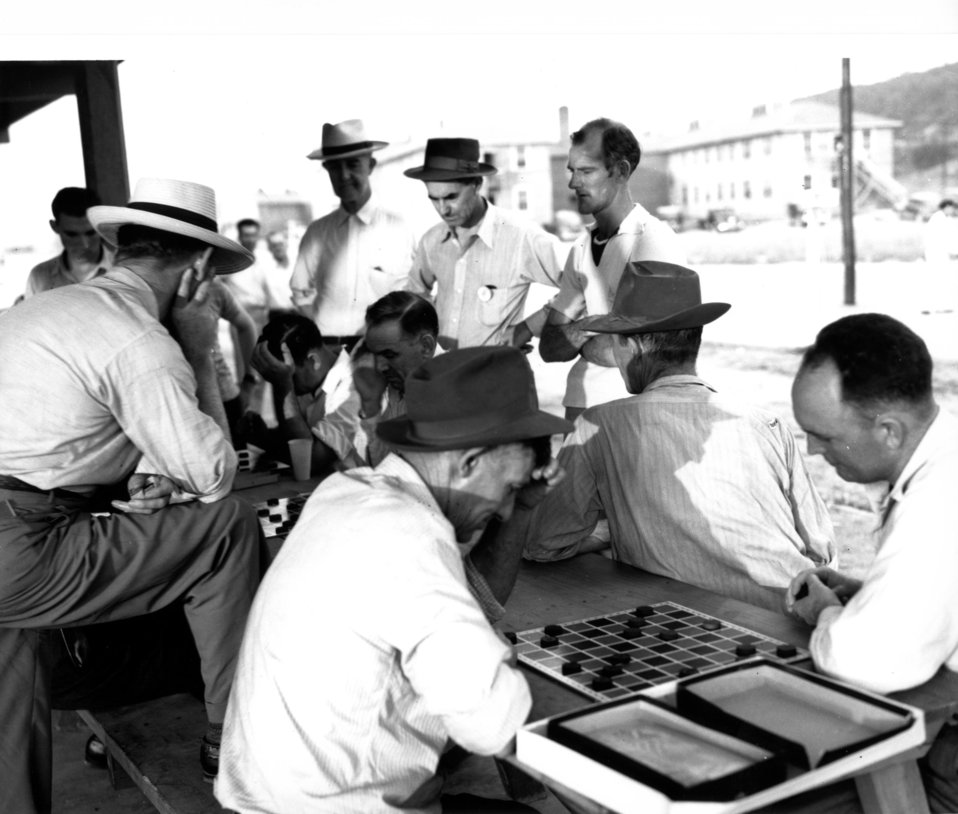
Recreation at Oak Ridge